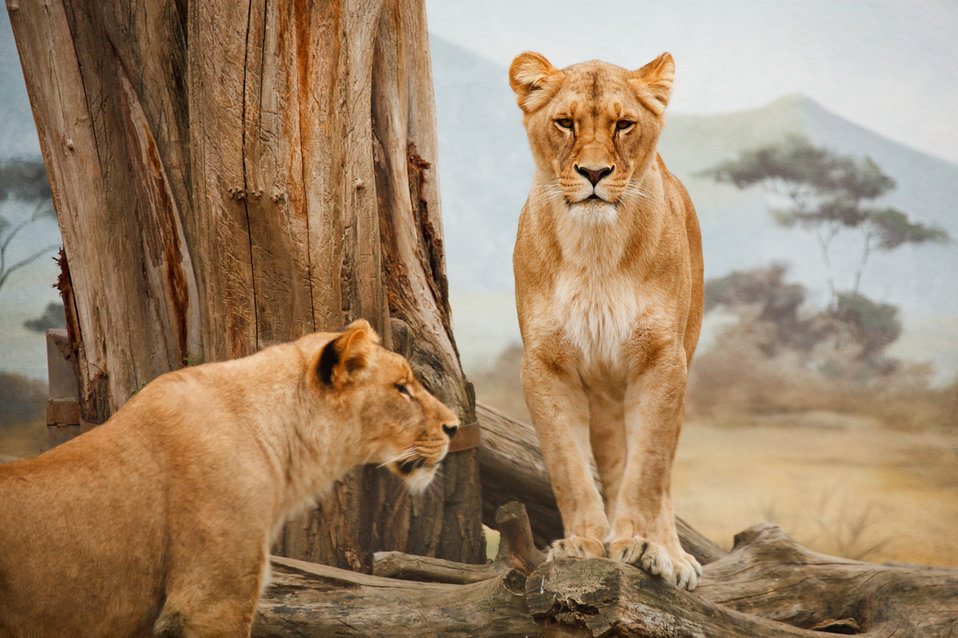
Lions standing

Two lions standing, one of them is on the log.